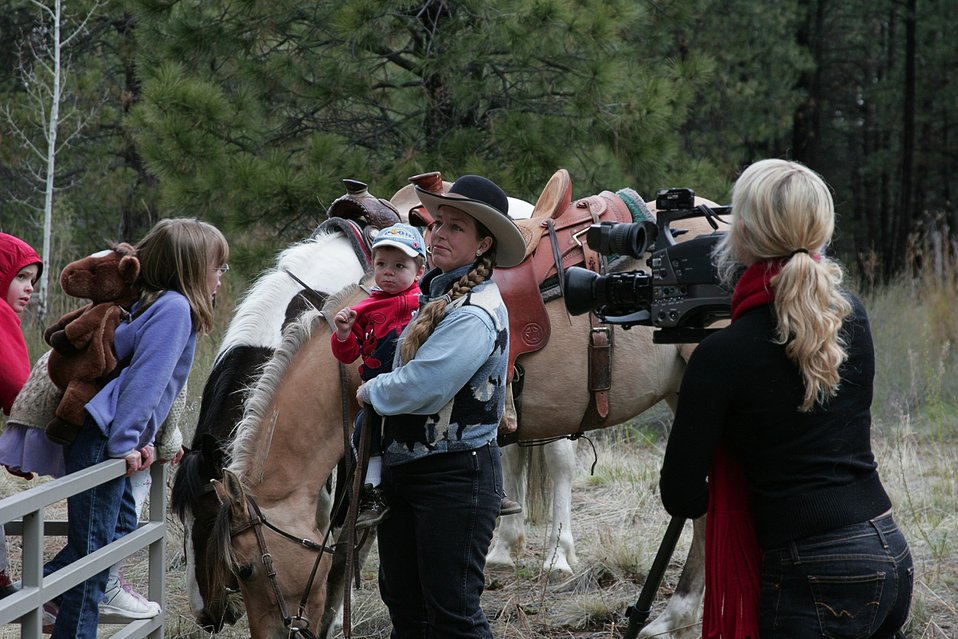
Bend Television station Z21 documents Horse Trainer Kitty Lauman talking with High Desert Museum visitors at the wild horse adoption of Spirit and Sage, two Oregon wild horses.